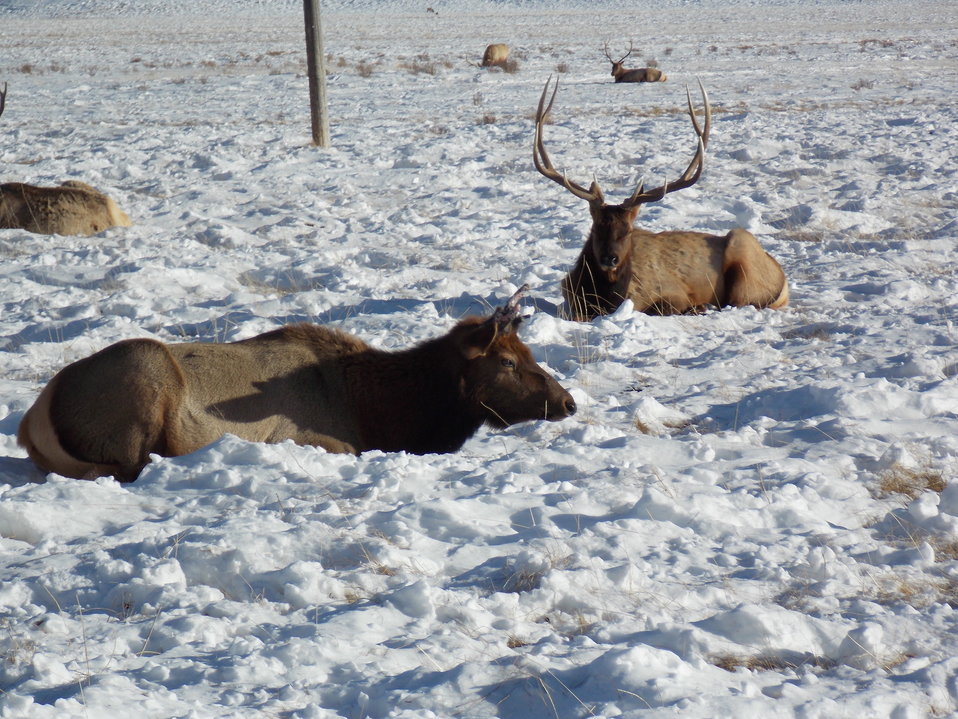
An Antler Anomaly

Though it's uncommon for a female elk to have antlers, the unusual growth can occur due to hormonal imbalance. This generally occurs in older females. The antler set is referred to as eo-antlers.

Credit: USFWS / Jessica Stirling, NER winter naturalist